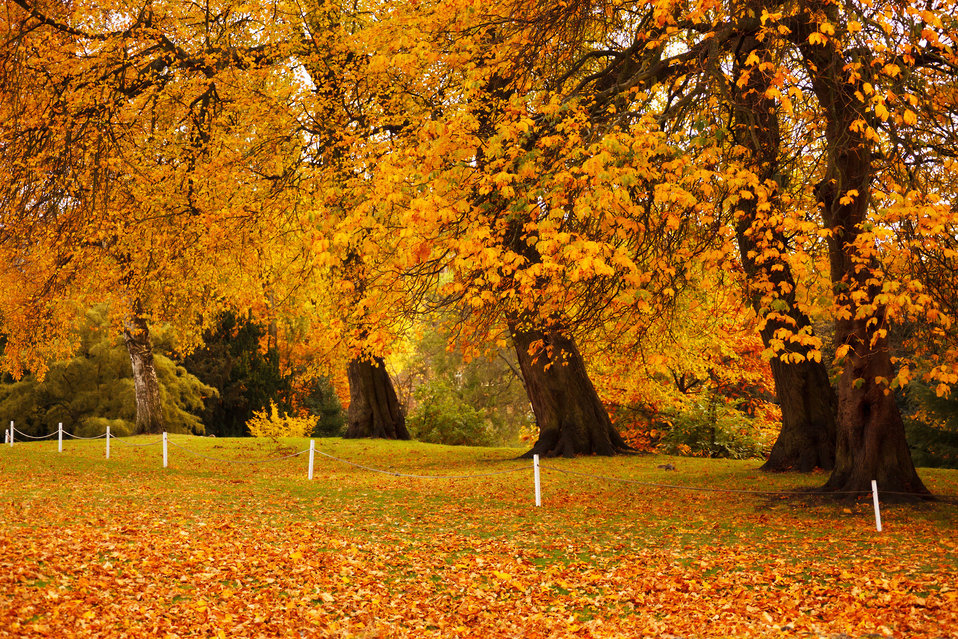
Autumn in park

Colorful autumn in park in york.